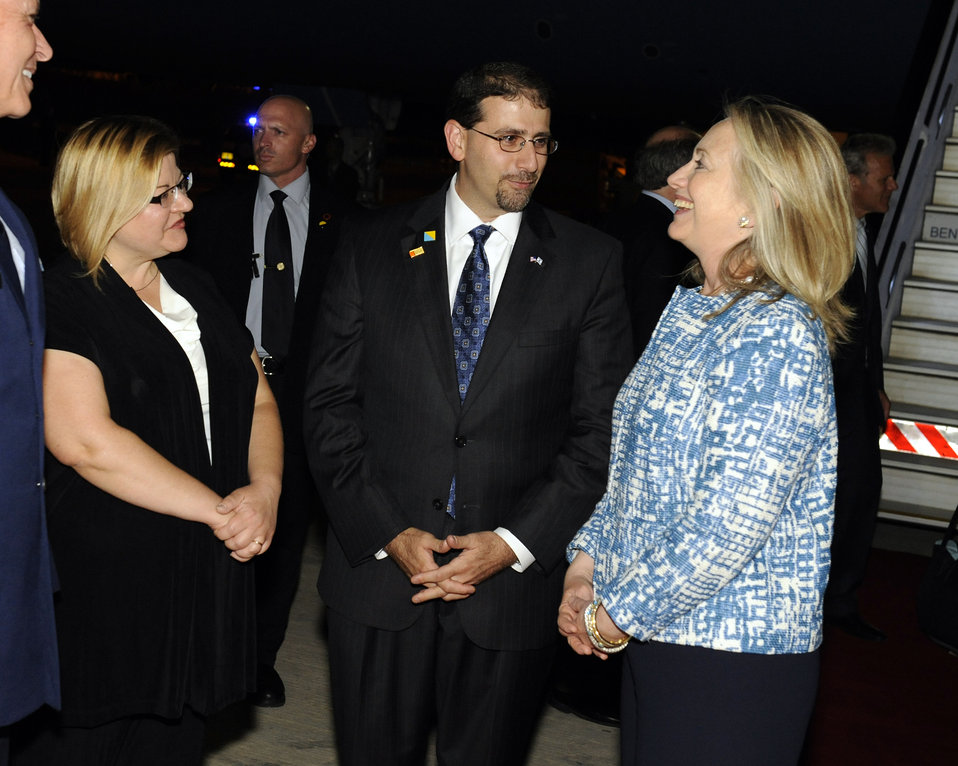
Secretary Clinton Is Greeted By Ambassador Shapiro and His Wife Julie Fisher

U.S. Secretary of State Hillary Clinton is greeted by U.S. Ambassador to Israel Daniel Shapiro and his wife Julie Fisher upon arriving in Tel Aviv, Israel, on July 15, 2012.